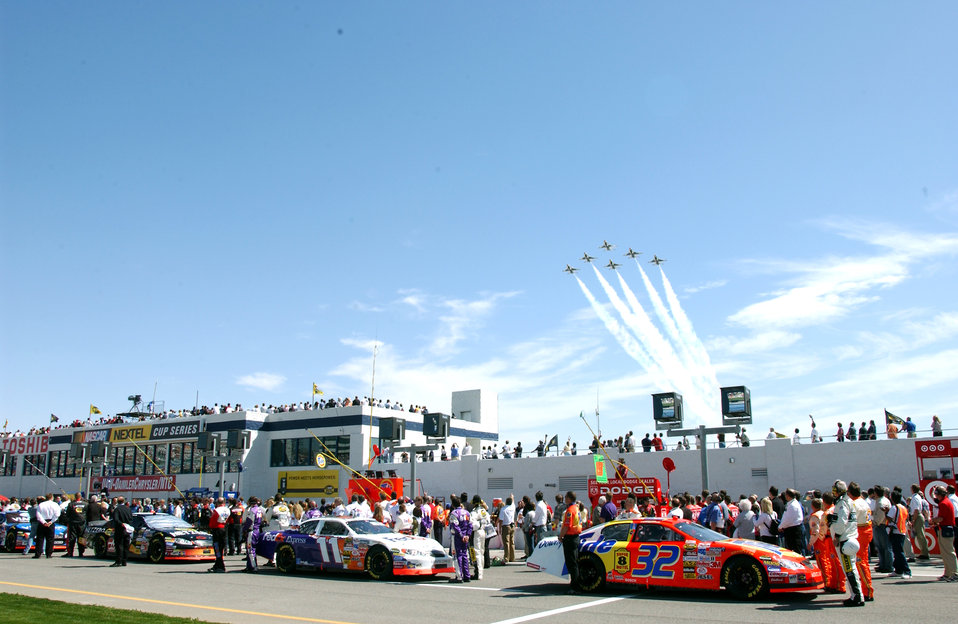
Thunderbirds fly high at NASCAR event

LAS VEGAS -- The Air Force Thunderbirds flew their trademark Delta formation during the opening ceremony at a NASCAR race here March 13.